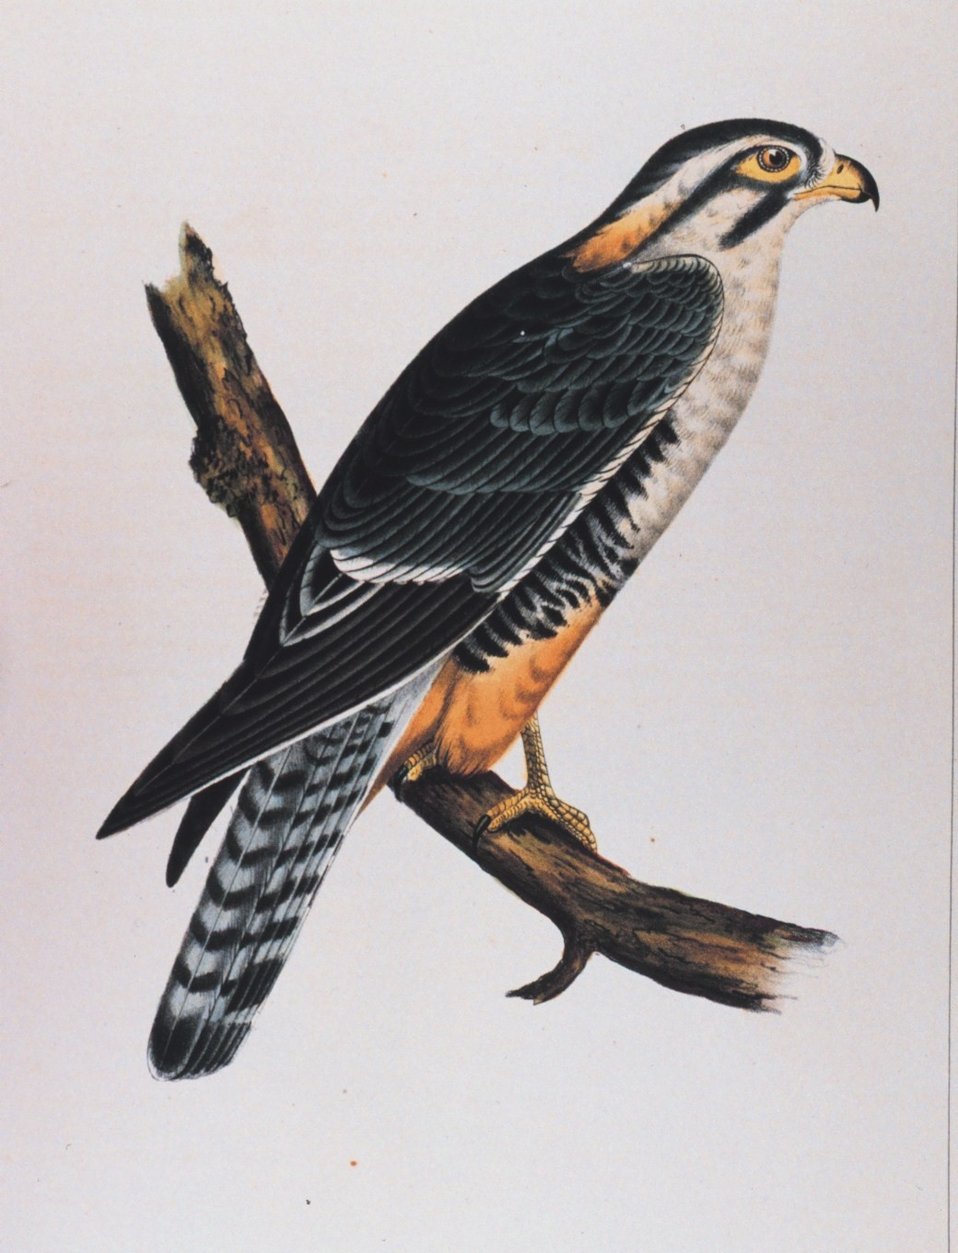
Buteo elegans, Cassin (adult). This image was included in: Reports of Explorations and Surveys .... Volume X. 1859. Plate I. P. 20 of U. S. Pacific Railroad Explorations and Surveys 32nd Parallel. Library Call Number F593 .U58 1855.